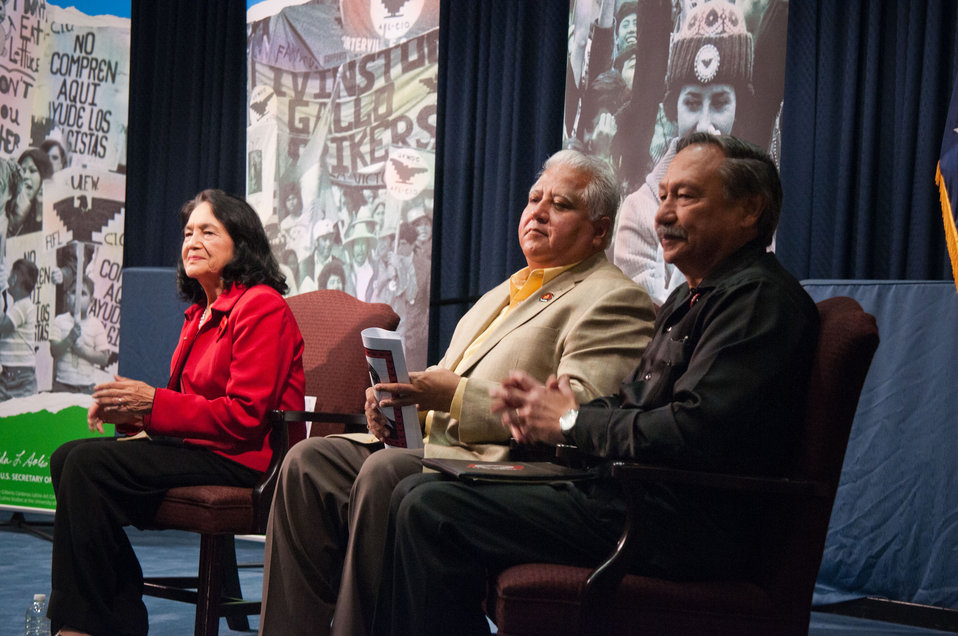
From left: Dolores Huerta, a partner in founding the United Farm Workers Union of America, Paul Chavez, son of farm labor leader Cesar Chavez and Arturo Rodriguez, President, United Farm Workers of America listen to cabinet members, family and friends express their thoughts and reminiscence of Cesar Chavez the farm workers rights activist during the dedication of the Cesar E. Chavez Memorial Auditorium at the United States Department of Labor in Washington, D.C., Monday, March 26, 2012. Chavez was a Mexican-American labor leader who used non-violent methods to fight for the rights of migrant farm workers in the southwestern United States. Chavez founded the Cesar Chavez Foundation, a group that advocates for the rights of farm workers, acting to increase wages and improve the working conditions and safety of farm workers.